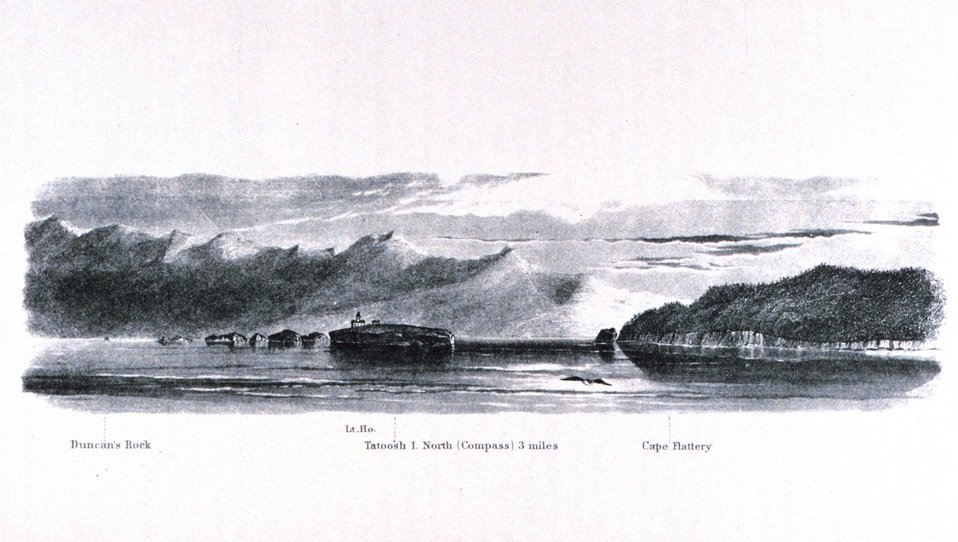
The lighthouse at Tatoosh Island with Cape Flattery and the entrance to the Straits of Juan de Fuca seen in the right center. In: Pacific Coast. Coast Pilot of California, Oregon, and Washington Territory . By George Davidson, 1869. P. 179. Library Call Number VK947.D4 1869.